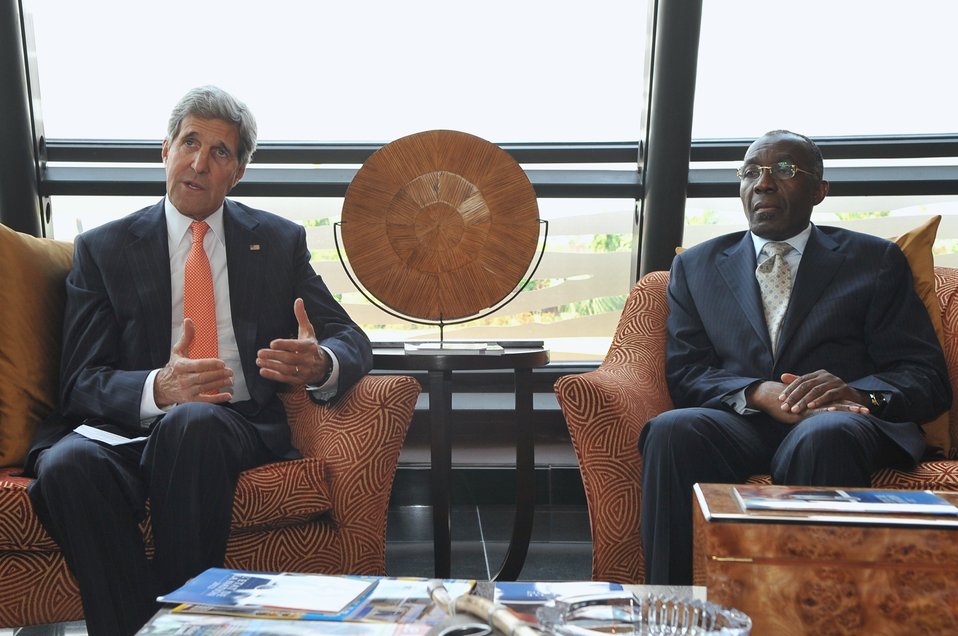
Secretary Kerry Addresses Reporters About His Visit to the DRC

U.S. Secretary of State John Kerry addresses reporters about his visit to the Democratic Republic of Congo after his arrival in Kinshasa on May 3, 2014.